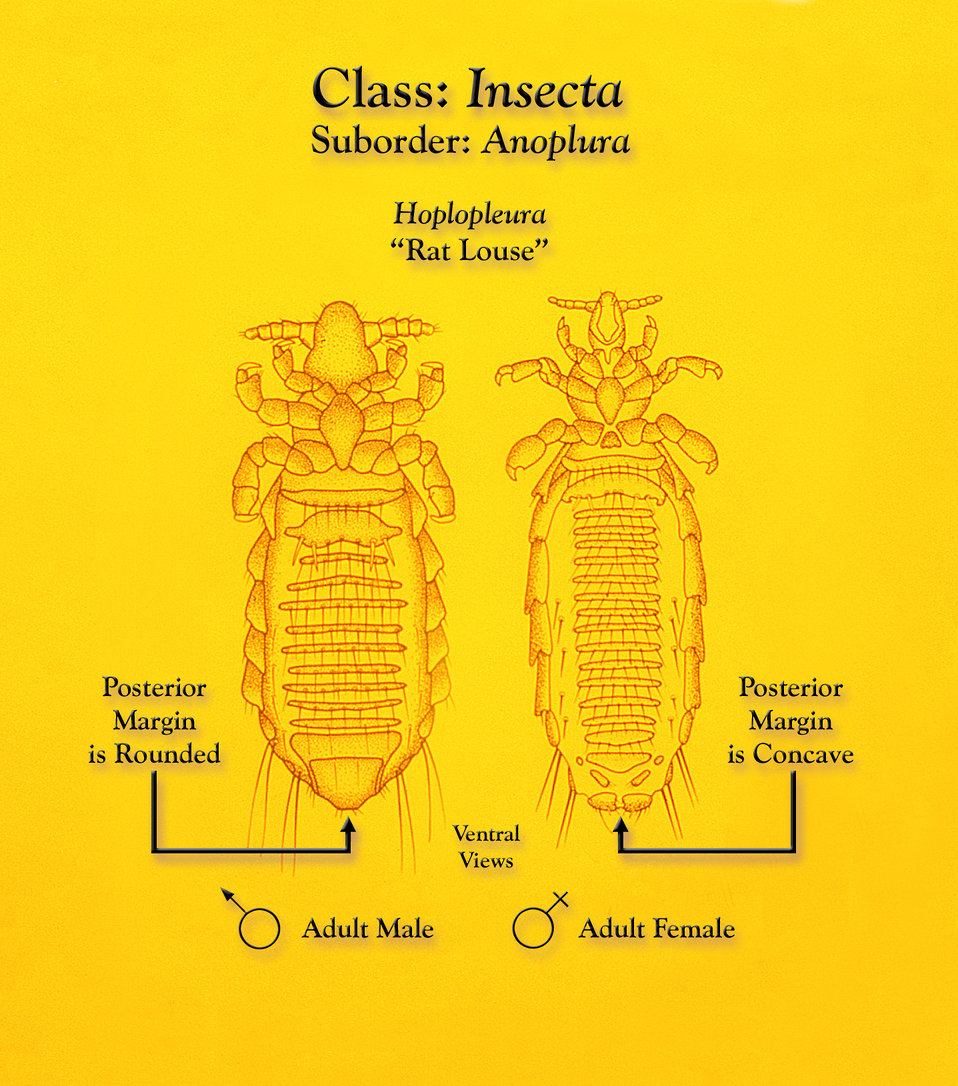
This illustration depicts a male (Lt) and female (Rt) 'rat louse' of the genus Hoplopleura from a ventral view.